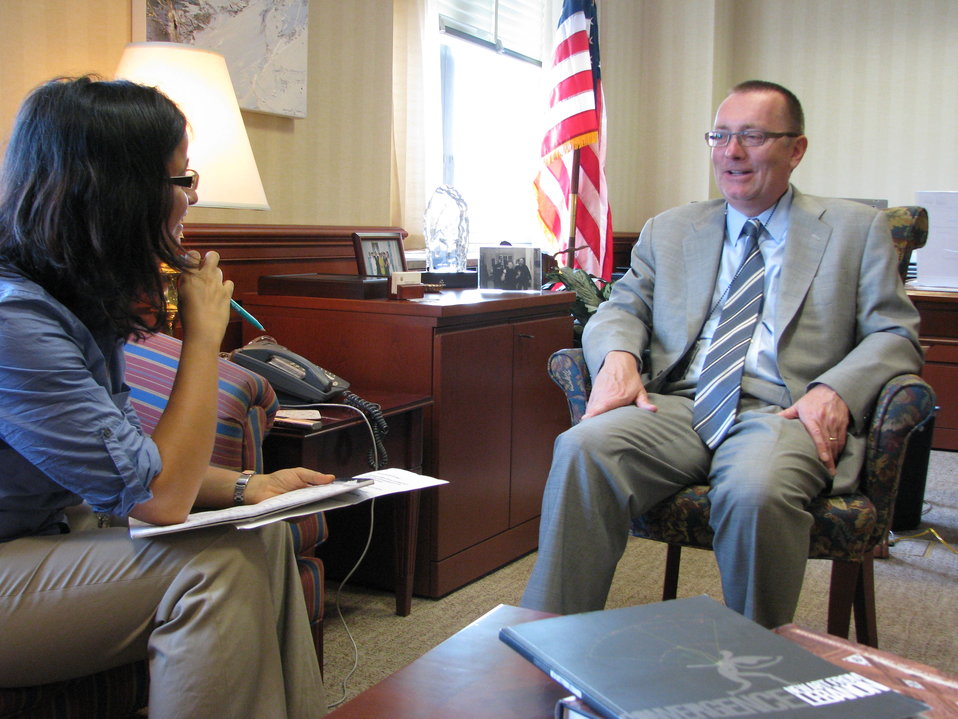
Assistant Secretary Feltman Is Interviewed By Al-Hayat’s Joyce Karam

U.S. Assistant Secretary of State for Near Eastern Affairs Jeffrey D. Feltman is interviewed by Al-Hayat’s Joyce Karam at the U.S. Department of State in Washington, D.C., on July 15, 2010.